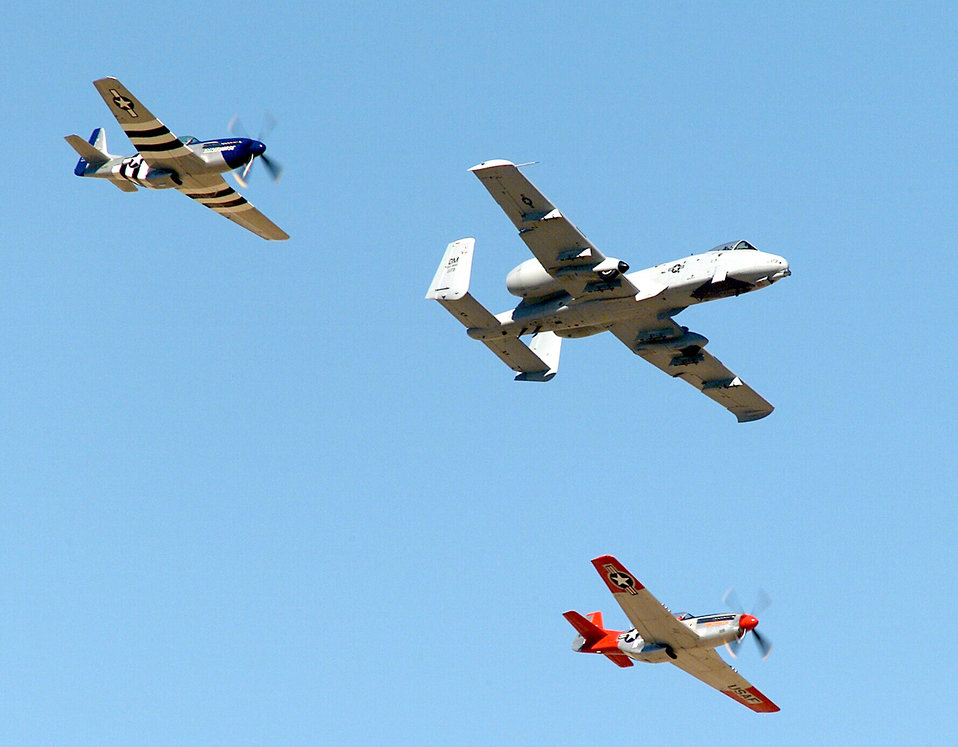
P-51 Mustangs

DAVIS-MONTHAN AIR FORCE BASE, Ariz. (AFPN) -- Two P-51 Mustangs fly in formation with an A-10 Thunderbolt II during the Heritage Flight Conference held here recently. The Heritage Flight Conference is designed to train and certify the Air Combat Command A-10, F-16 Fighting Falcon and F-15 Eagle demonstration pilots to fly in formation with historical aircraft.